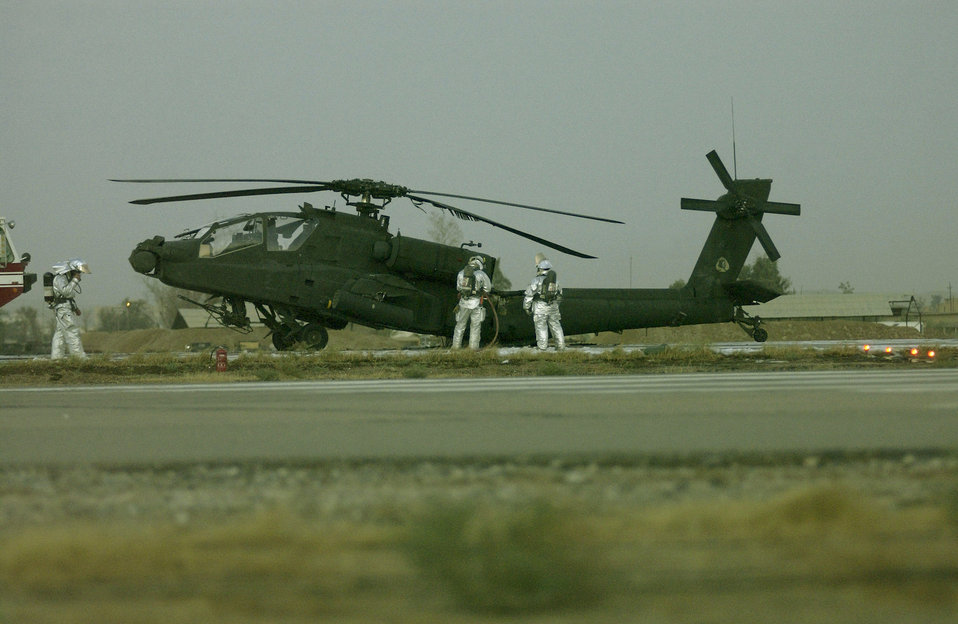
Iraqi Freedom

KIRKUK AIR BASE, Iraq -- Airmen with the 506th Expeditionary Civil Engineer Squadron's fire department clean up after an Army AH-64 Apache crashed here, Oct. 23. The Apache’s crew was not harmed when they made an emergency landing shortly after takeoff. The cause of the crash is under investigation.